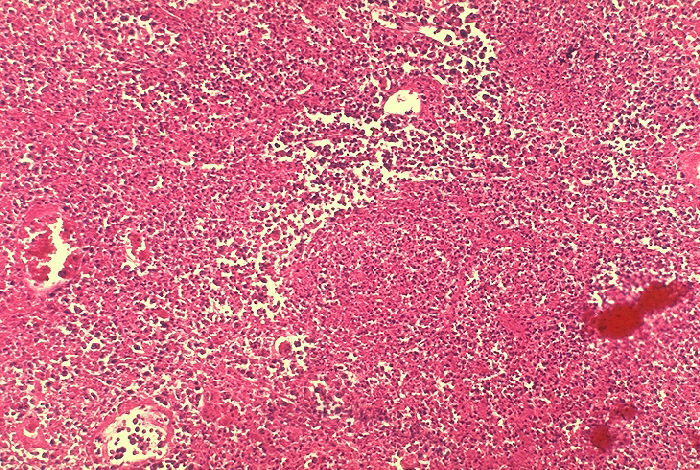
Histopathology of mediastinal lymph node in fatal human anthrax.